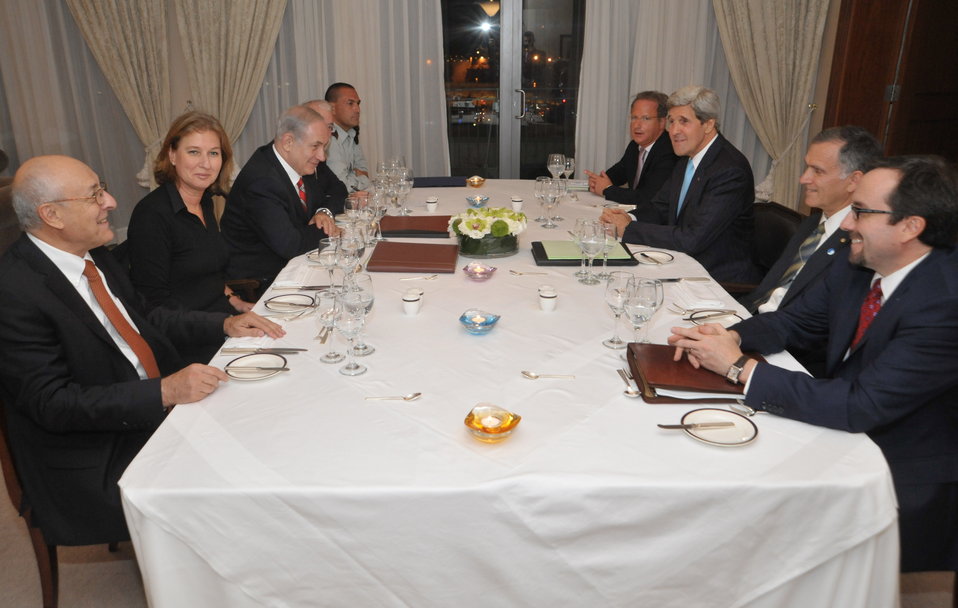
Secretary Kerry Dines With Israeli Prime Minister Netanyahu

U.S. Secretary of State John Kerry sits across from Israeli Prime Minister Benjamin Netanyahu before their two delegations enjoyed dinner in Jerusalem on June 29, 2013.